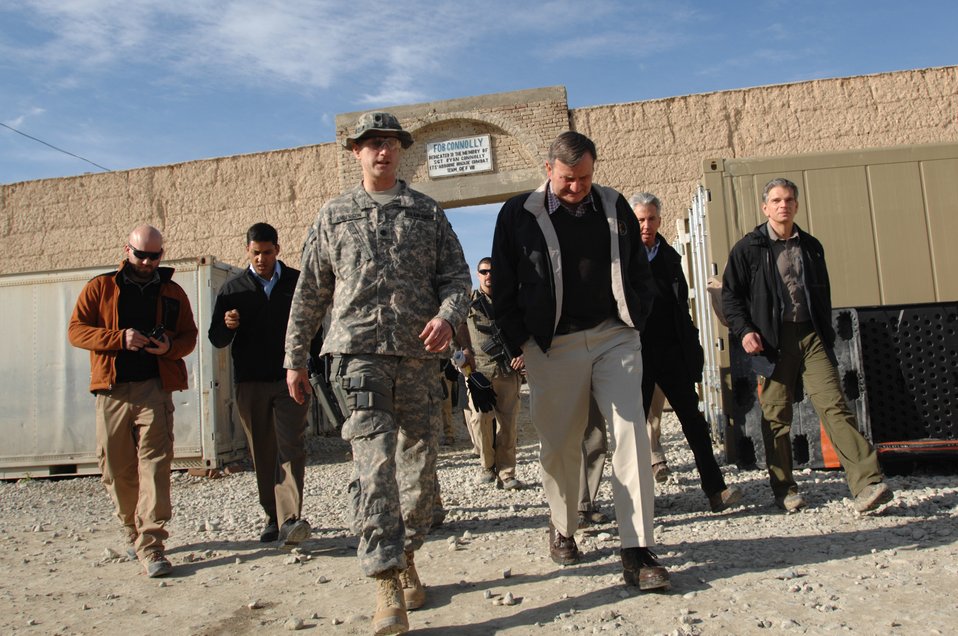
110209sv Shah068

U.S. Ambassador Karl W. Eikenberry and Dr. Rajiv Shah, Administrator of the United States Agency for International Development (USAID), walk through FOB Connelloy with Lt. Col. Michael Anderson in Nangarhar province on Wednesday, February 9, 2011. (S.K. Vemmer/Department of State)